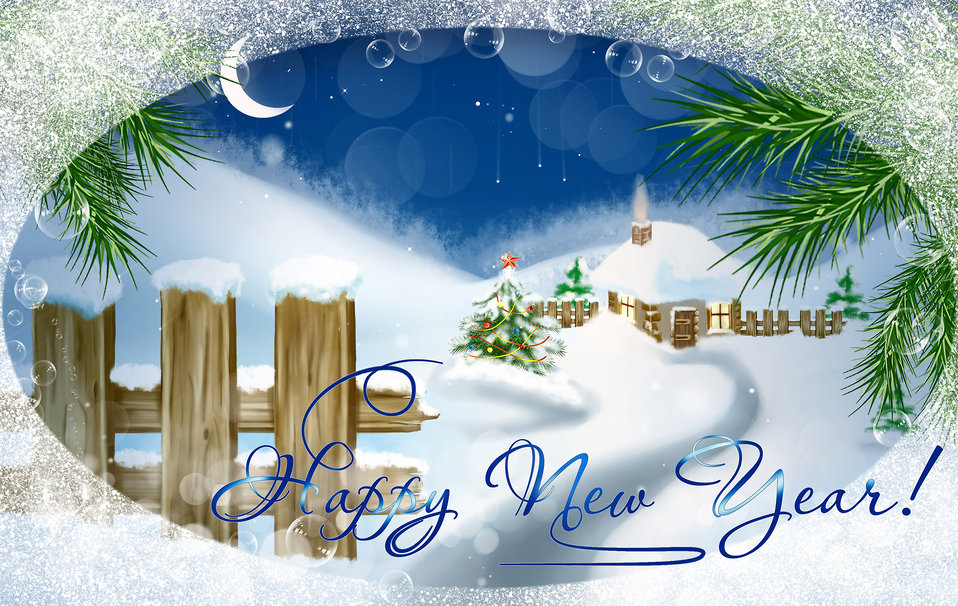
Card with new year

Digital painting postcards with the new year.